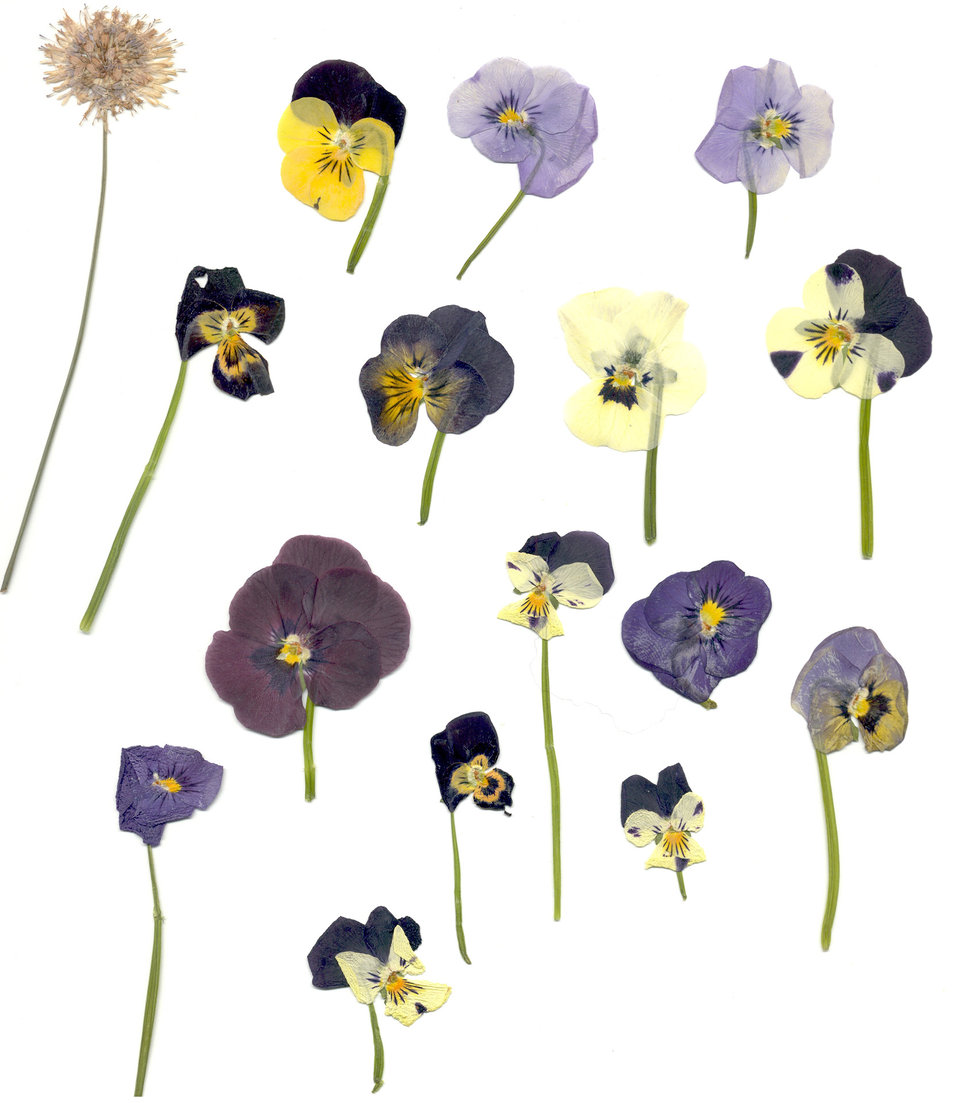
Viola flower

Pressed pansies.